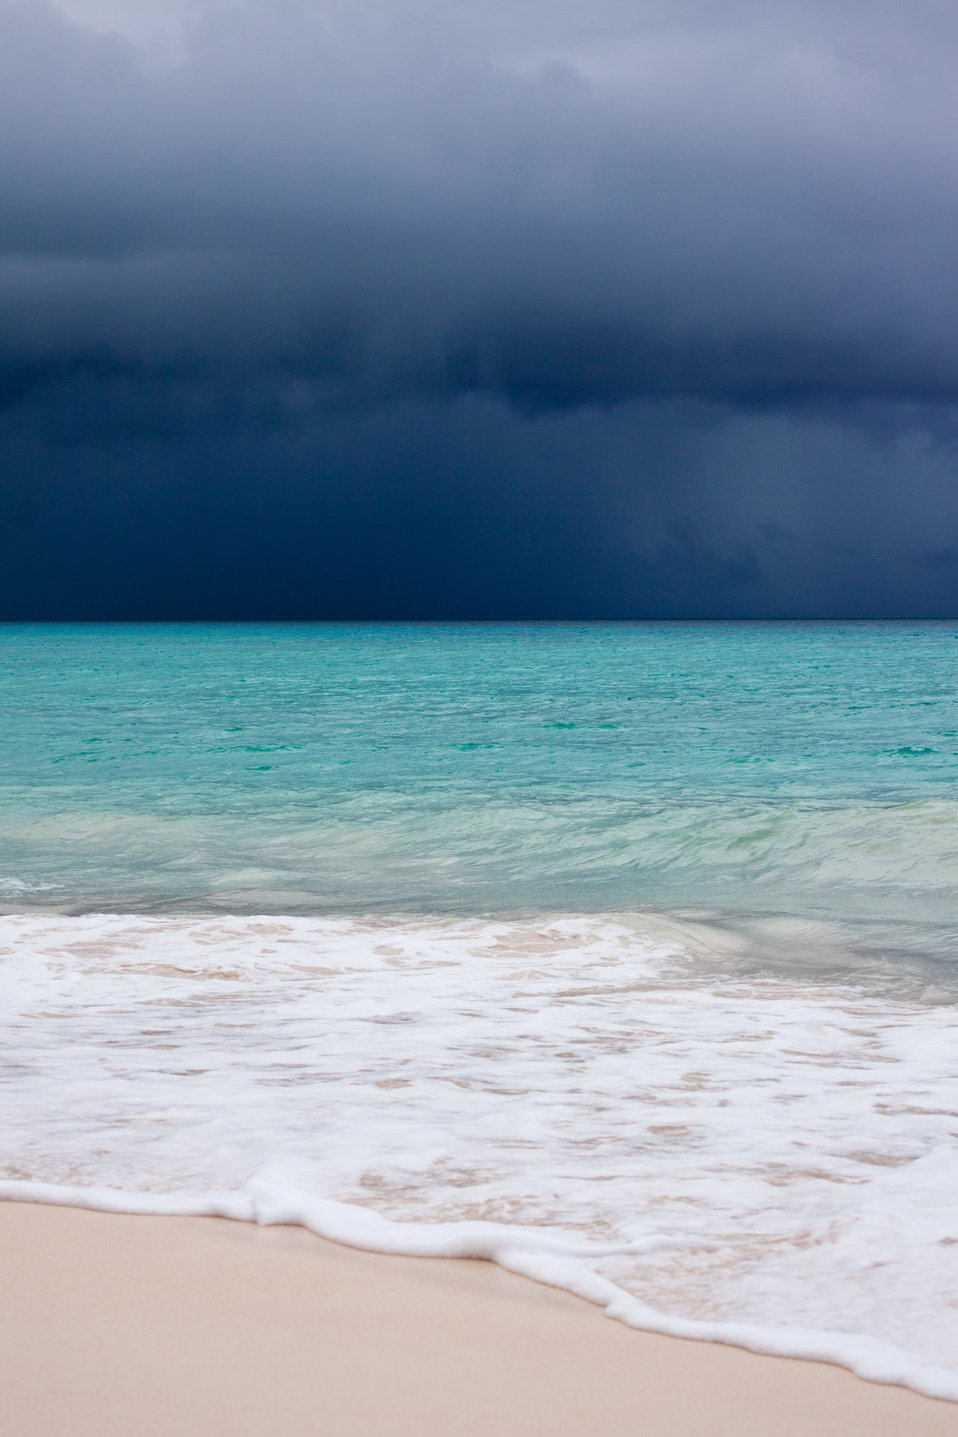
Storm above sea

Tropical storm is coming.